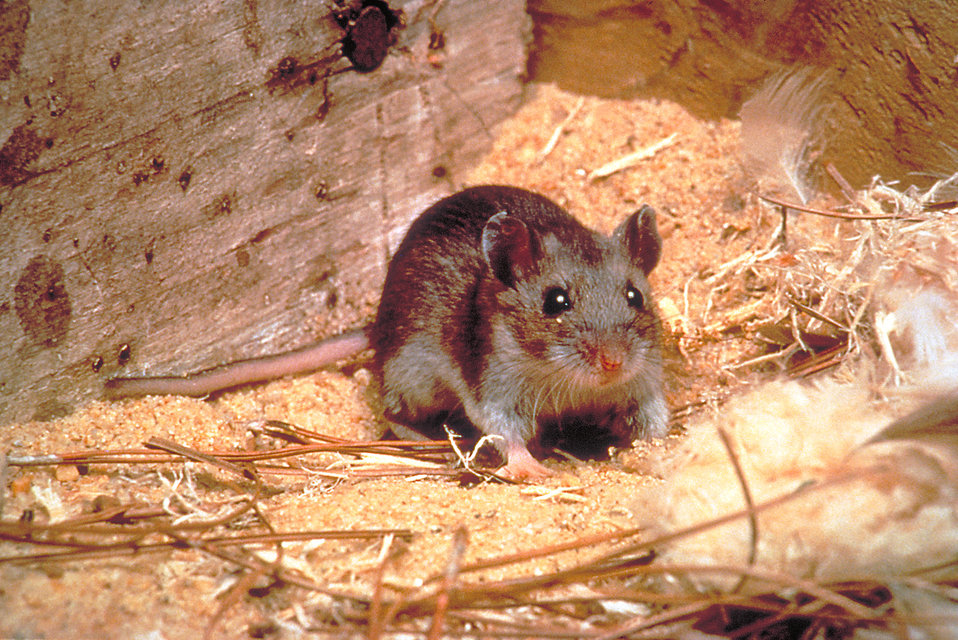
This is a deer mouse, Peromyscus maniculatus, a Hantavirus carrier that becomes a threat when it enters human habitation in rural and suburban areas.Hantavirus pulmonary syndrome (HPS) is a deadly disease transmitted by infected rodents through urine, droppings, or saliva. Humans can contract the disease when they breathe in aerosolized virus. HPS was first recognized in 1993 and has since been identified throughout the United States. Although rare, HPS is potentially deadly. Rodent control in and around the home remains the primary strategy for preventing hantavirus infection. All hantaviruses known to cause hantavirus pulmonary syndrome (HPS) are carried by New World rats and mice of the family Muridae, subfamily Sigmodontinae, which contains at least 430 species that are widespread throughout North and South America.